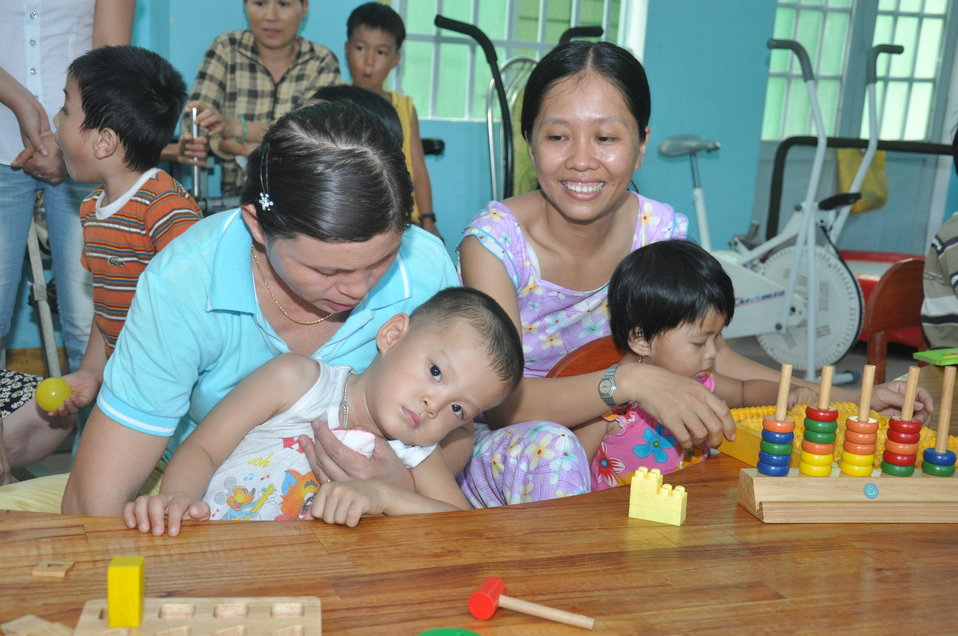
USAID Supports Persons with Disabilities in Danang

Danang, June 10, 2013.